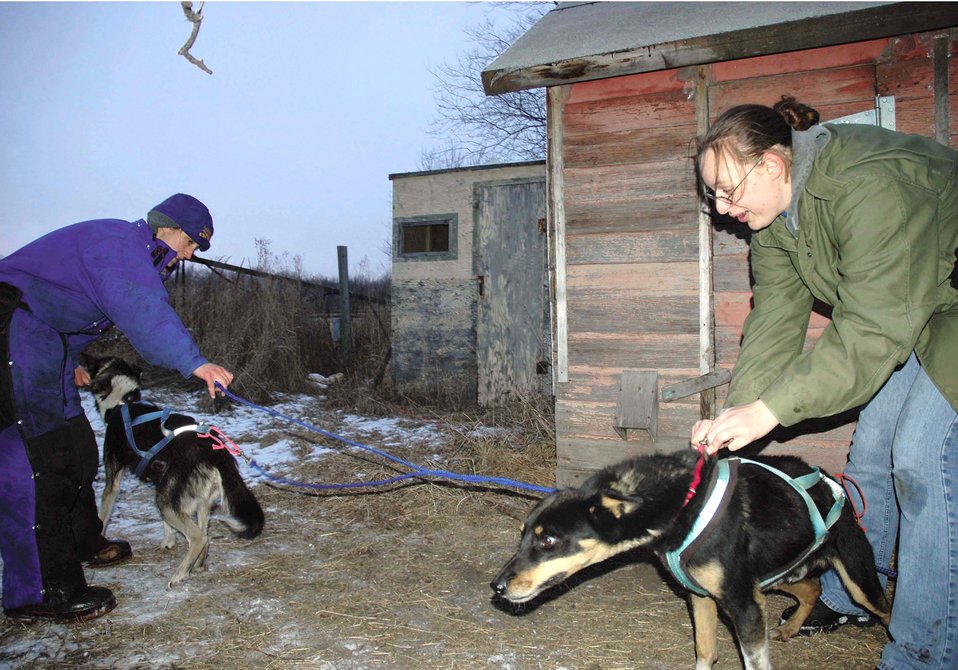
Airman's hobby goes to the dogs

DEERING, N.D. -- Senior Airman Mary Lunde (left) and Airman 1st Class Jessica Whitington tighten the harness on one of Airman Lunde's dogs. She owns more than a dozen sled dogs that she trains with weekly in hopes of one day racing in the Iditarod. The Airmen are assigned to the 5th Munitions Squadron at nearby Minot Air Force Base.